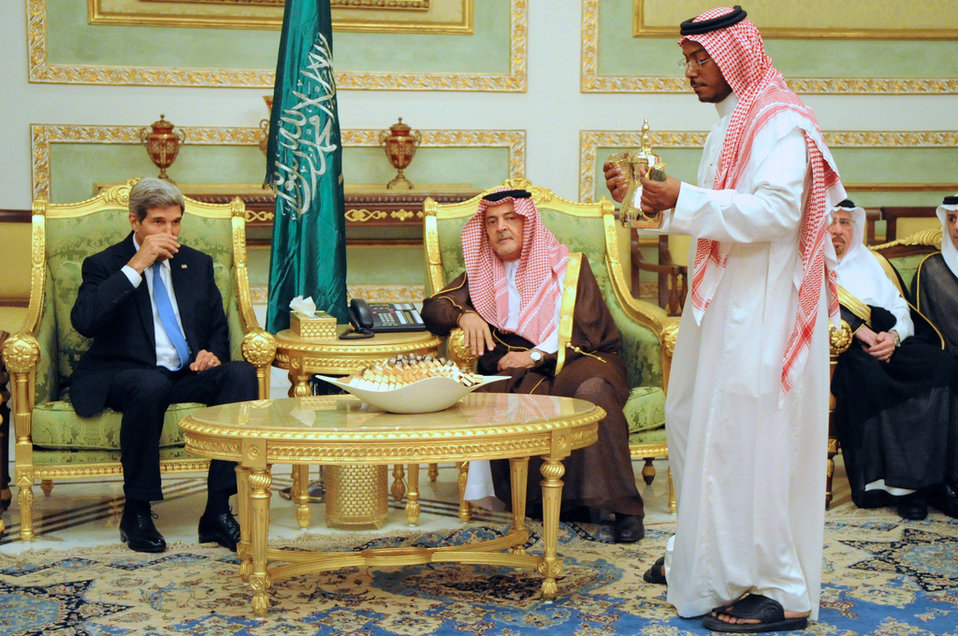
Secretary Kerry Participates in a Saudi Coffee Ceremony

U.S. Secretary of State John Kerry sips coffee during a traditional arrival ceremony hosted by Foreign Minister Prince Saud al-Faisal in Riyadh, Saudi Arabia, on November 3, 2013.